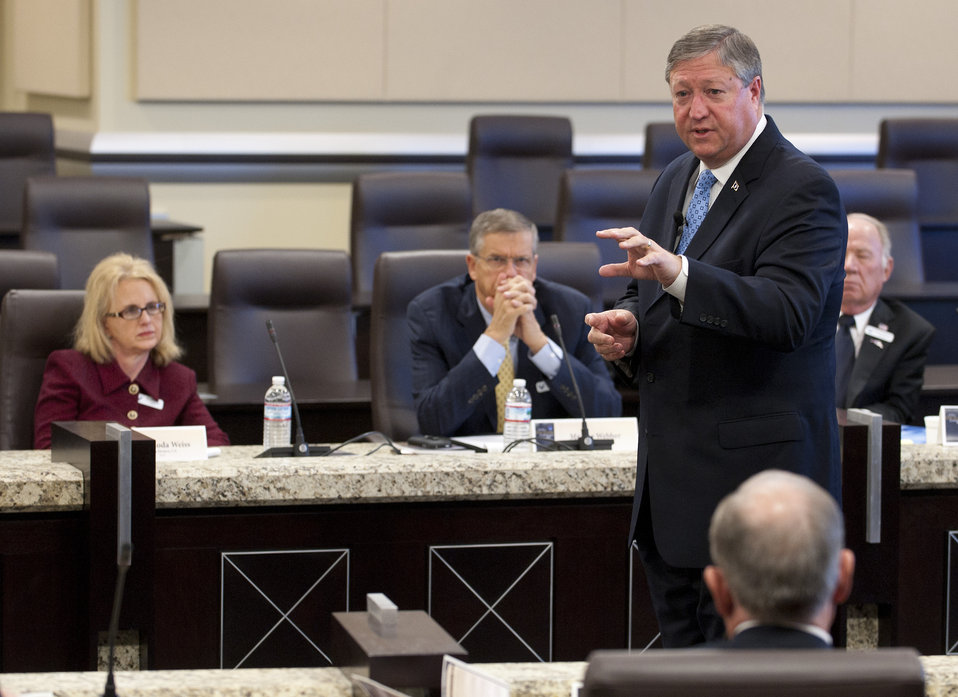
AF leaders meet with U.S. civic leaders

Secretary of the Air Force Michael Donley (standing upper right) speaks with civic leaders representing communities from across the U.S. during a conference Jan. 31, 2012, at Joint Base Andrews, Md. Hosted by Air Force Chief of Staff Gen. Norton Schwartz, the civic leaders attended briefings at the Pentagon and at Joint Base Andrews.